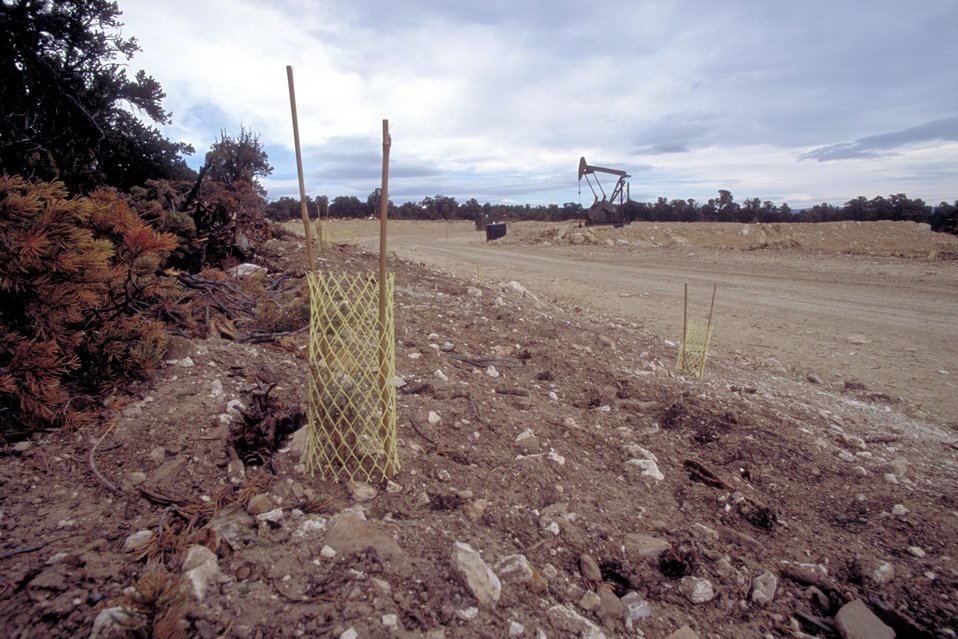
Rehab in coal bed methane production units near Price, Utah.